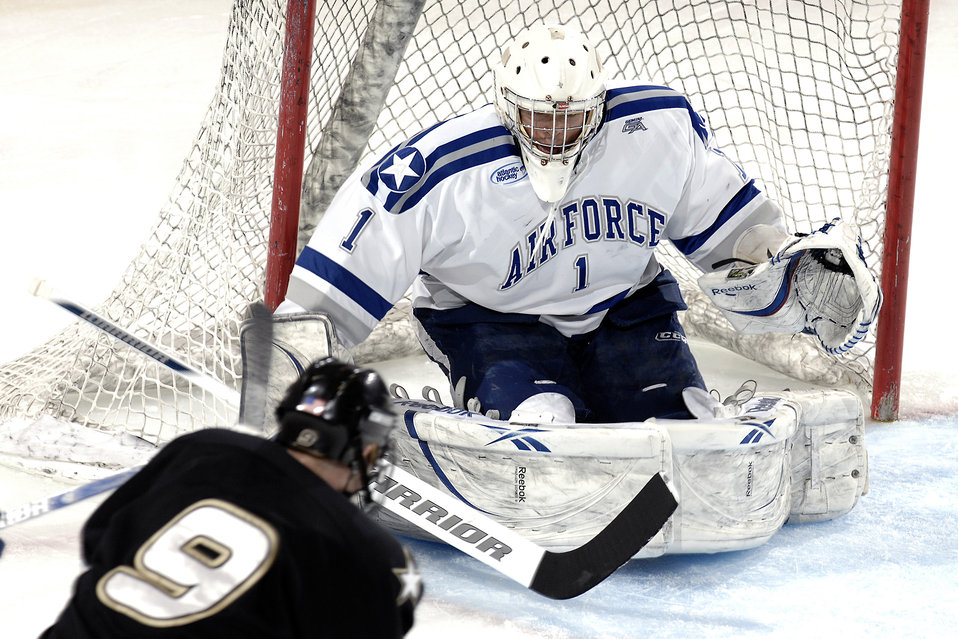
Air Force beats Army Black Knights

Falcon goalie senior Andrew Volkening recorded his third straight shutout as he made 29 saves in a 3-0 win over Army in the first game of a three-game quarterfinal series March 12, 2010, at the U.S. Air Force Academy's Cadet Ice Arena. Air Force went on to win the best-of-three series 2-0, advancing to the Atlantic Hockey Association Final Four against Sacred Heart March 19 in Rochester, N.Y.